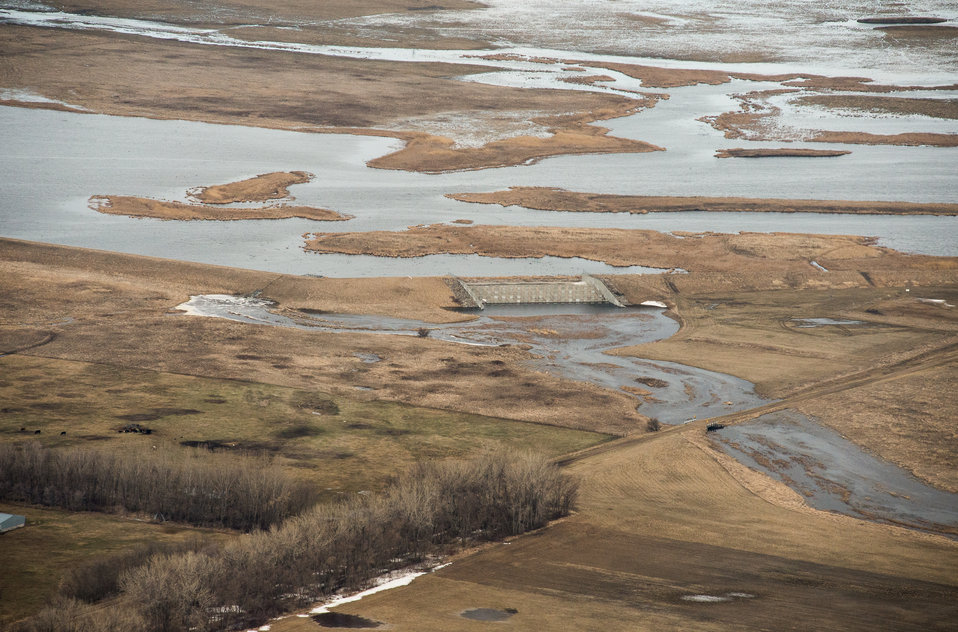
English Coulee Watershed Dam, a Public Law PL83-566 Small Watershed Program, in Grand Forks County, ND, on Tuesday, April 30, 2013.